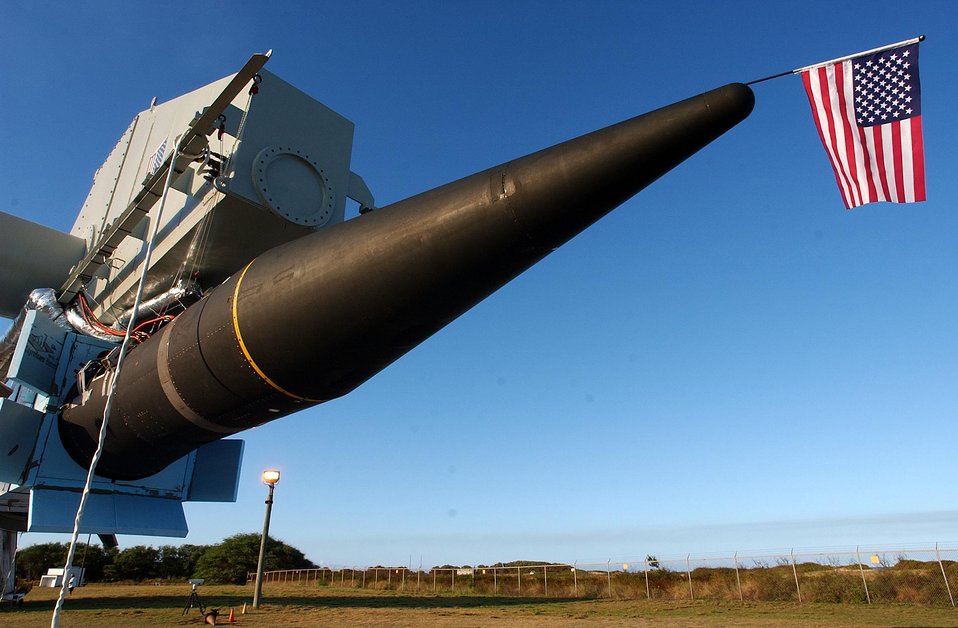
THE FM-5 TARGET ROCKET ON ITS RAIL LAUNCHER, BEING PREPARED FOR LIFT-OFF.

FM-5 IS A MISSILE DEFENSE ROCKET BEING PREPARED FOR LAUNCH. SANDIA'S KAUAI TEST FACILITY, OPERATED FOR DOE, IS ON THE U.S. NAVY'S PACIFIC MISSILE RANGE FACILITY ON THE ISLAND OF KAUAI, HAWAII. SANDIA SCIENTISTS AND TECHNICIANS TO CONDUCT ROCKET FLIGHT TEST EXPERIMENTS RANGING FROM OFFENSIVE AND DEFENSIVE WEAPONS TESTING TO ATMOSPHERIC STUDIES AND HIGH TECH STAR GAZING.